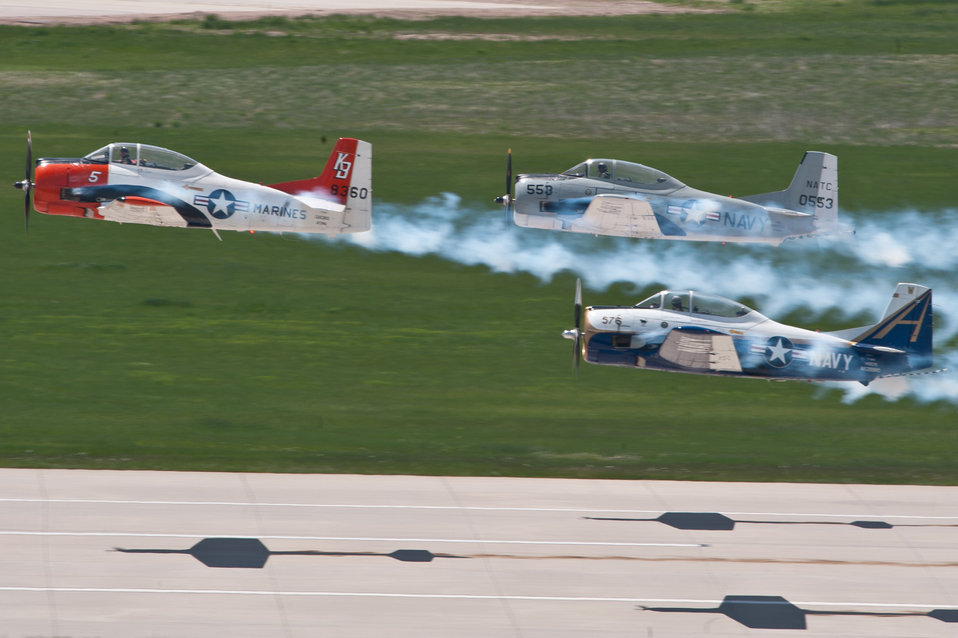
2011 Dakota Thunder air show

Members of the Trojan Horsemen, a T-28 Trojan demonstration team, take off June 4, 2011, during the 2011 Dakota Thunder air show at Ellsworth Air Force Base, S.D.